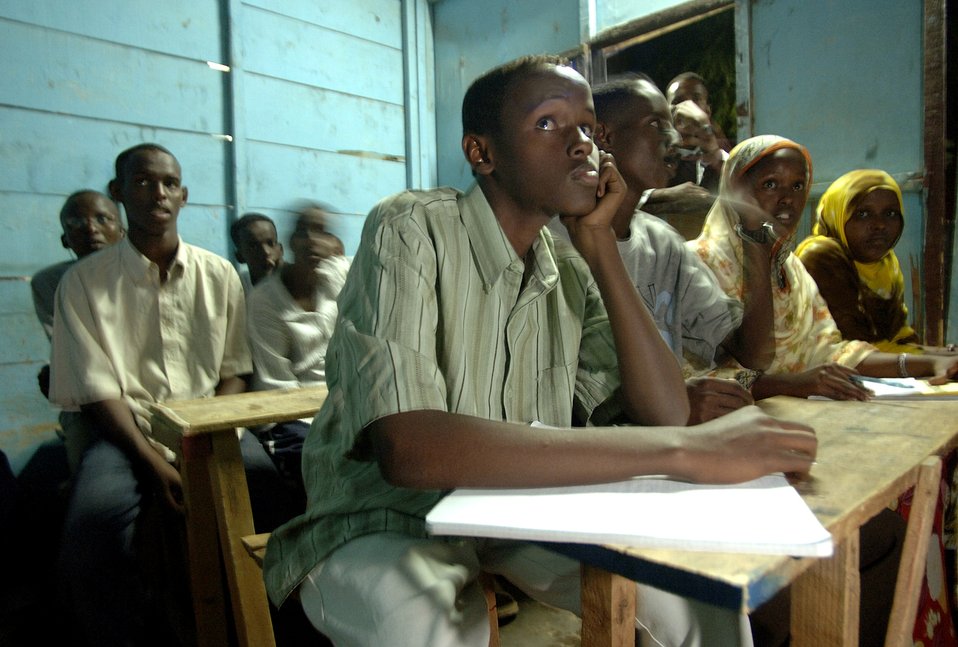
Americans, Djiboutians build relationships

Djiboutian students at the Horsed Private School of English listen to a U.S. servicemember deployed to Camp Lemonier, Djibouti, answer a question about American culture and immigration.